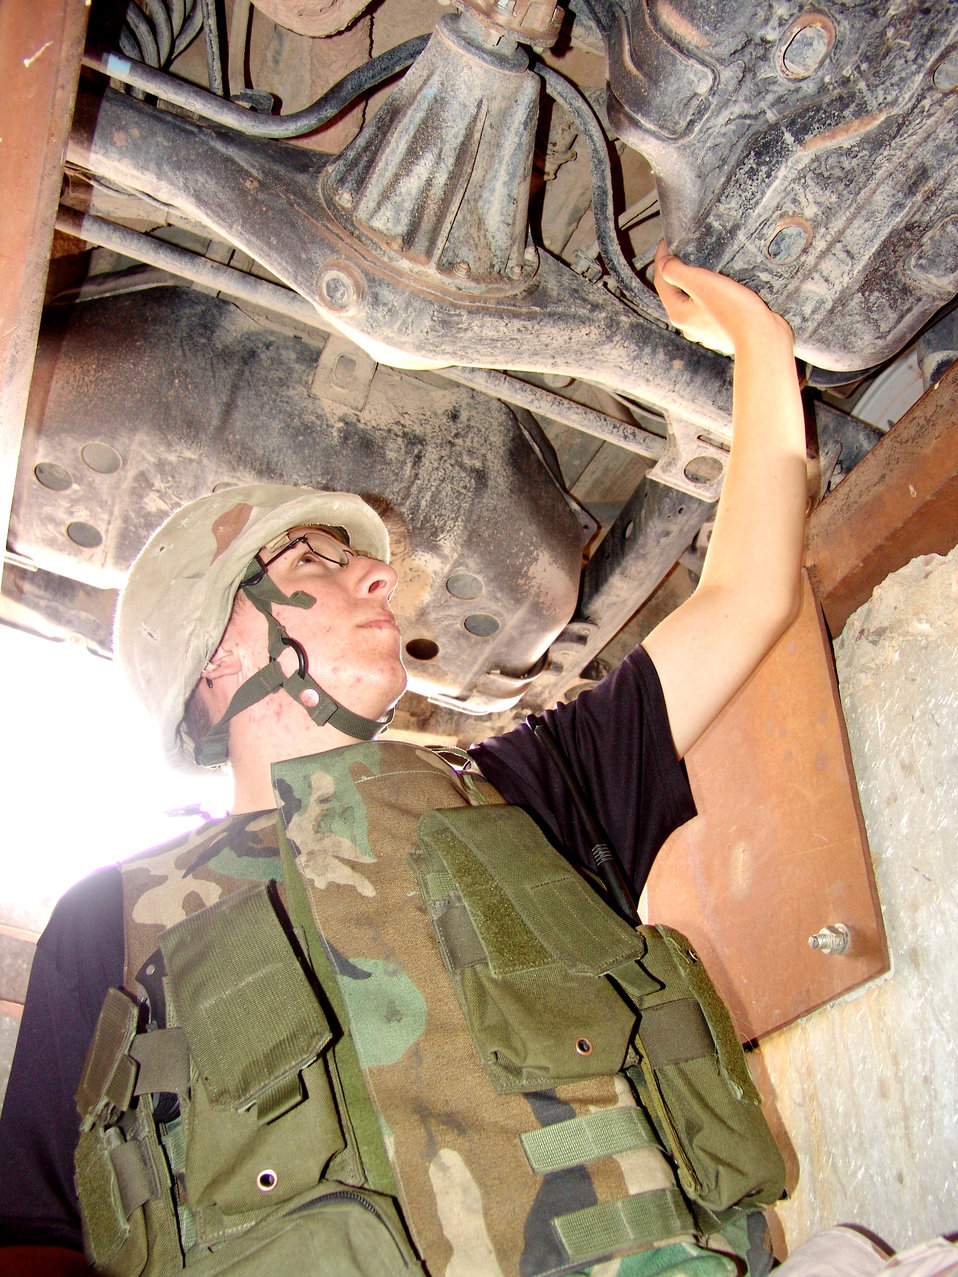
All secure

SOUTHWEST ASIA -- Airman 1st Class Matthew Leake searches a vehicle for explosives at the main gate at a forward-deployed location. He is assigned to the 386th Expeditionary Security Forces Squadron and is deployed from Kadena Air Base, Japan.